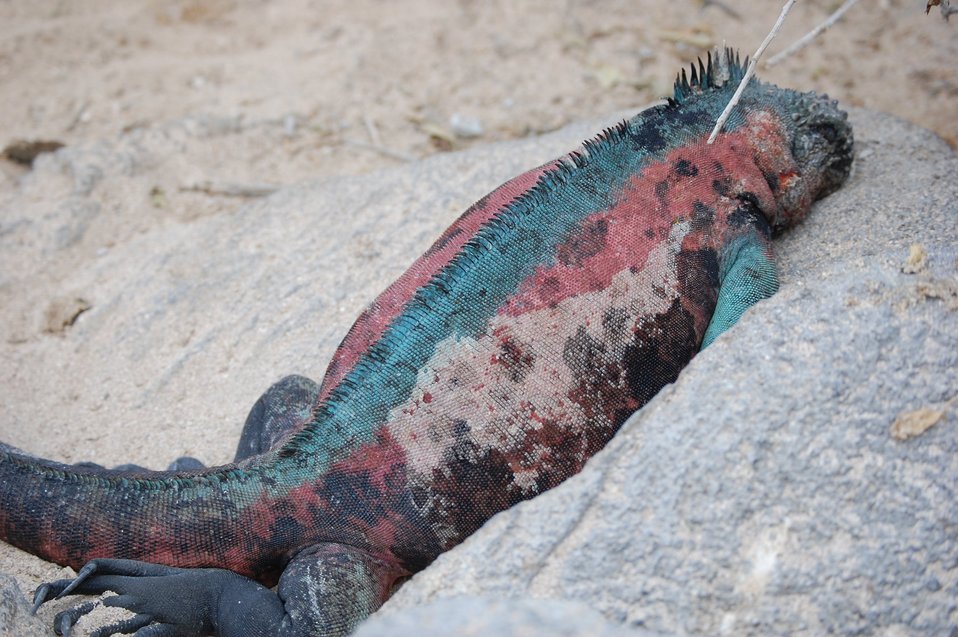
Marine iguana.